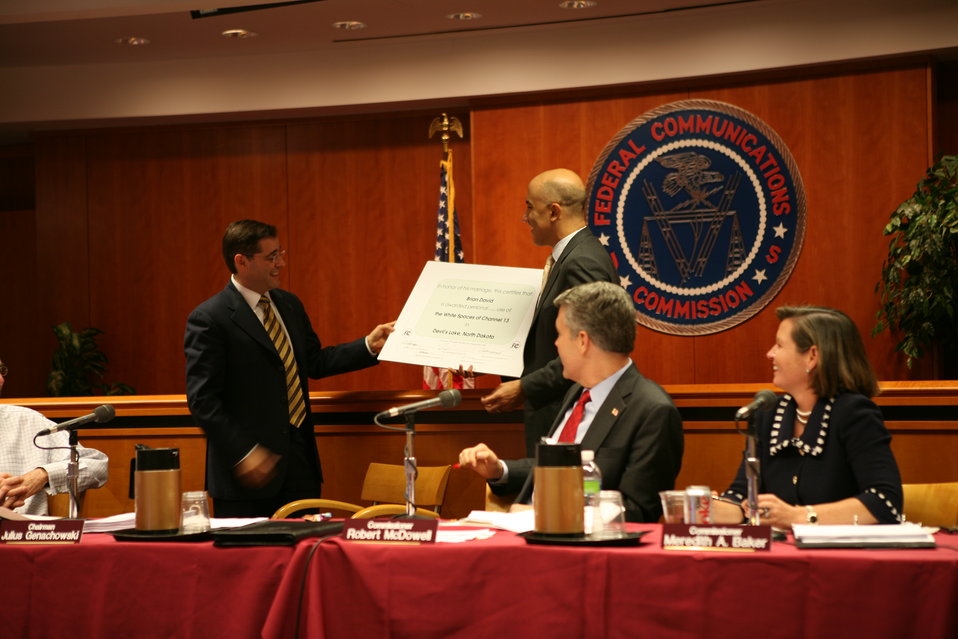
Broadband Midterm Review 9-29-09